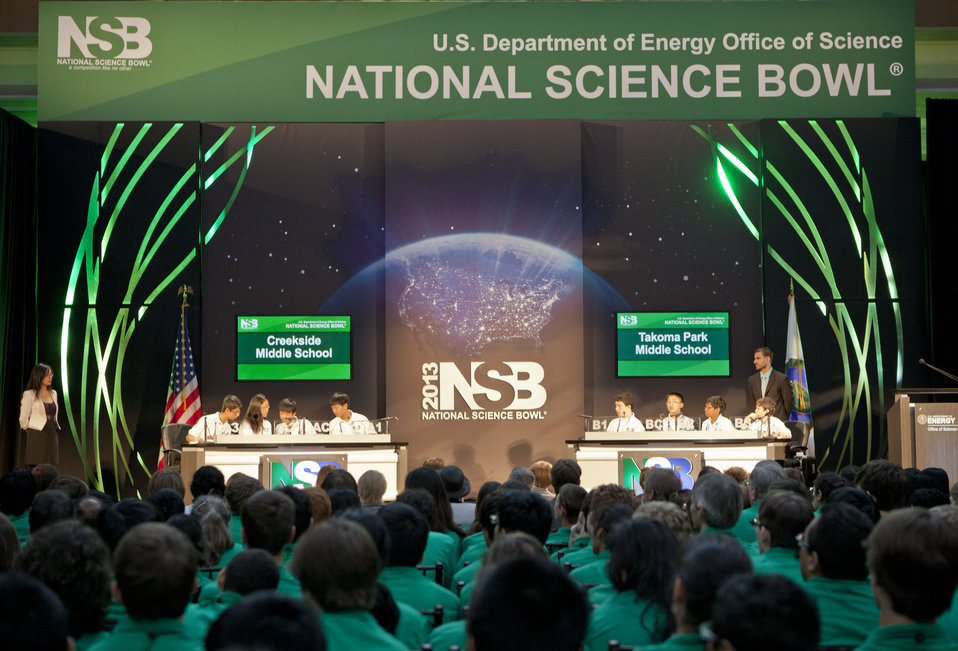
National Science Bowl 2013

Creekside Middle School beat Takoma Park Middle School in the 2013 National Science Bowl Championship, which took place at the National Buildings Museum in Washington, DC.